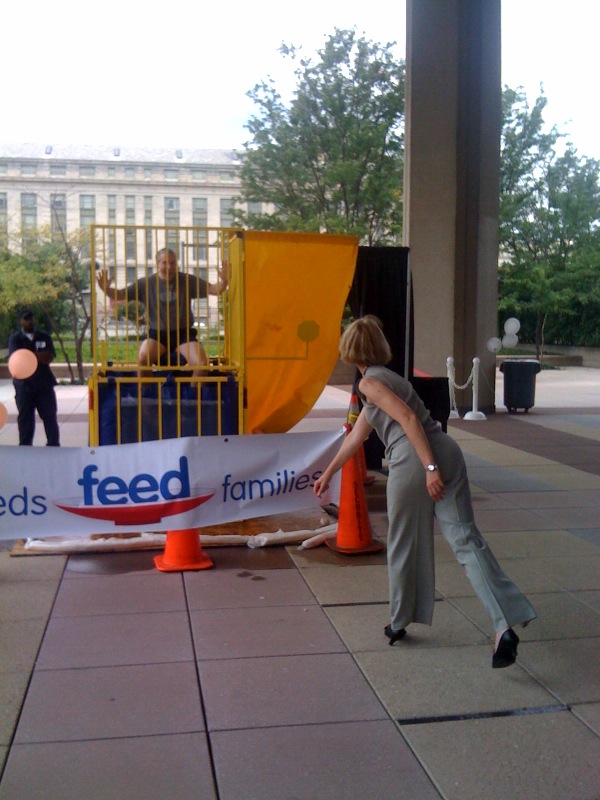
Senior Advisor Matt Rogers getting dunked by Under Secretary Dr. Kristina Johnson